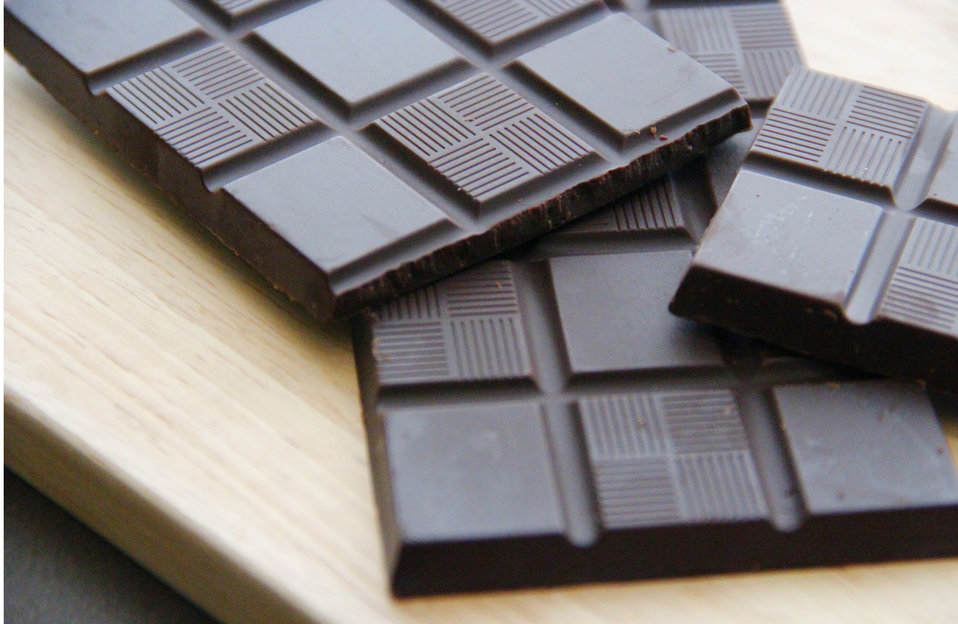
Set atop a wooden cutting board inside a home kitchen, this scored chocolate bar had been broken along its score lines into three distinct pieces.